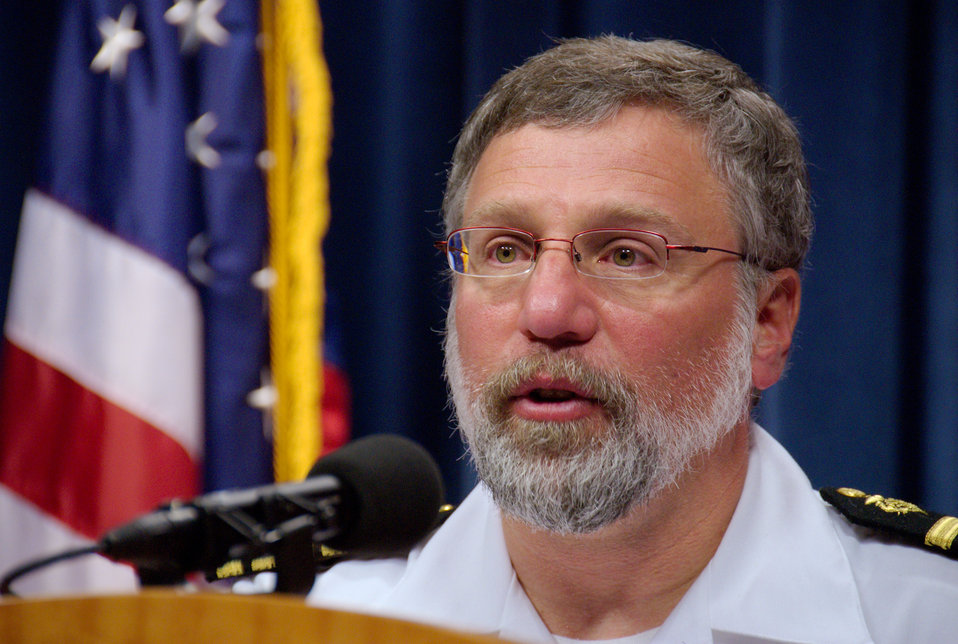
This 2007 image depicted Centers for Disease Control's, Director of the Division of Global Migration and Quarantine, Dr. Martin Centron, presenting information at a press briefing regarding the organization's public health investigation into who may have been exposed to an extensively drug-resistant tuberculosis (XDR-TB) infected person. The information release included the action and steps that the CDC was taking in response to a case of XDR-TB in a United States citizen who'd undertaken international travel. XDR-TB is a recently defined subtype of a multi-drug resistant TB, which can cause severe illness and death.